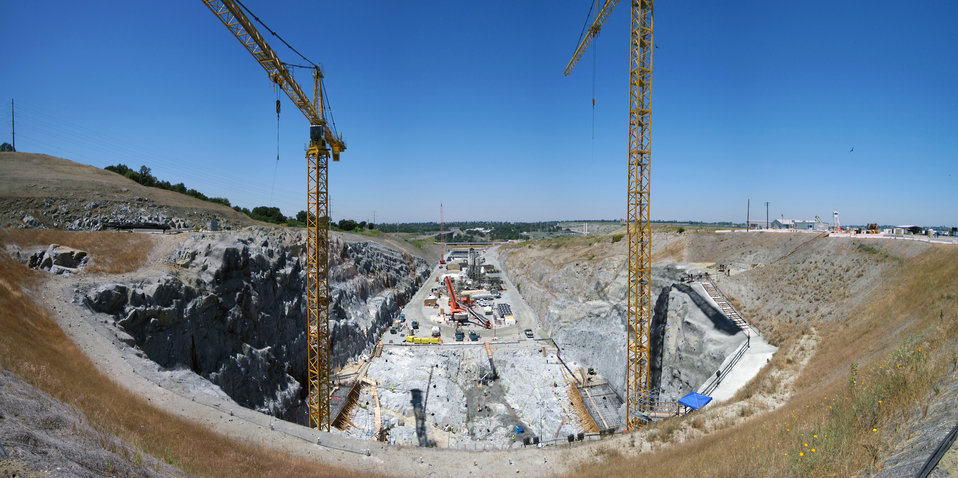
Panoramic view of auxiliary spillway construction at Folsom Dam site

Using digital imaging technology that “stitches” multiple images together to create a panoramic image, geologists for the U. S. Army Corps of Engineers Sacramento District provided this glimpse into the past of the Folsom Dam Joint Federal Project auxiliary spillway construction. The images used in the panoramic were taken May 30, 2012 at the Folsom Dam in Folsom, Calif. The Sacramento District is building the spillway in cooperation with the U.S. Bureau of Reclamation, the Central Valley Flood Protection Board, and the Sacramento Area Flood Control Agency to improve the safety of the existing dam and reduce flood risk for the greater Sacramento area. (U.S. Army photo illustration by Kim Jorgensen/Released)